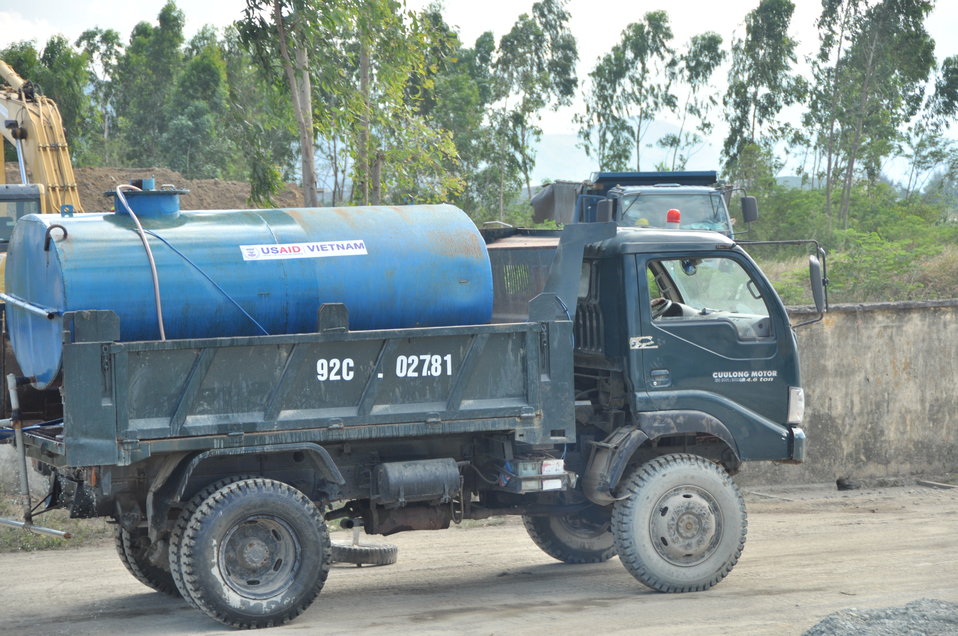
Site construction at the Environmental Remediation of Dioxin Contamination at Danang Airport

Progress at the Danang Airport remediation site
April 23, 2013